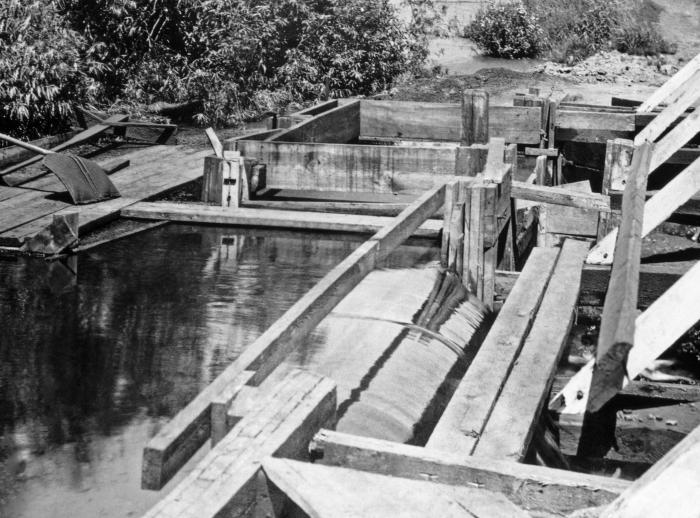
This historic 1929 photograph showed a coke plant sewer outlet into the St. Louis River at Morgan Park, Minnesota, near Duluth. A weir was installed in order to measure the water flow during the St. Louis water quality investigation survey of 1928-1929. This study, and later studies in 1948 and 1973, showed a progressive deterioration of the water quality in the river, and in nearby Spirit Lake.